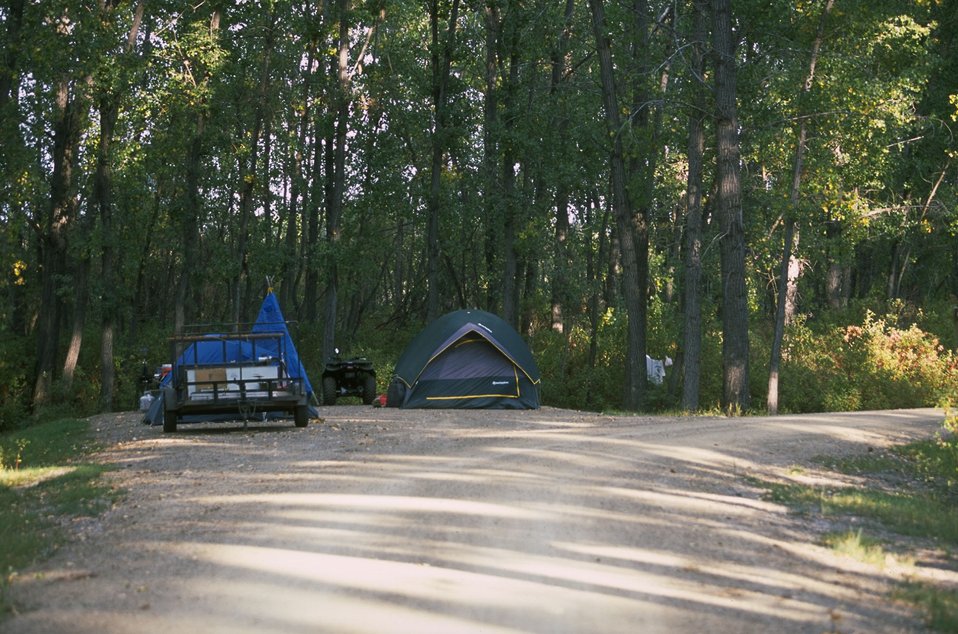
Kipp Recreation Area